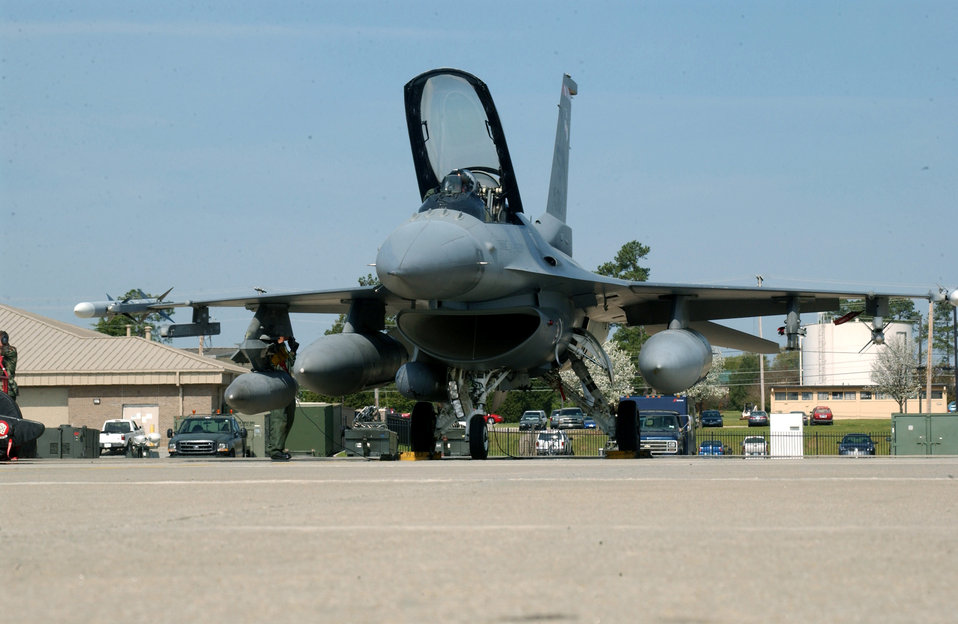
Prepare for launch

An F-16 Fighting Falcon from the 20th Fighter Wing is generated and readied for take off in support of an operational readiness exercise March 27 at Shaw Air Force Base, S.C. Exercises prepare Airmen for future deployments.